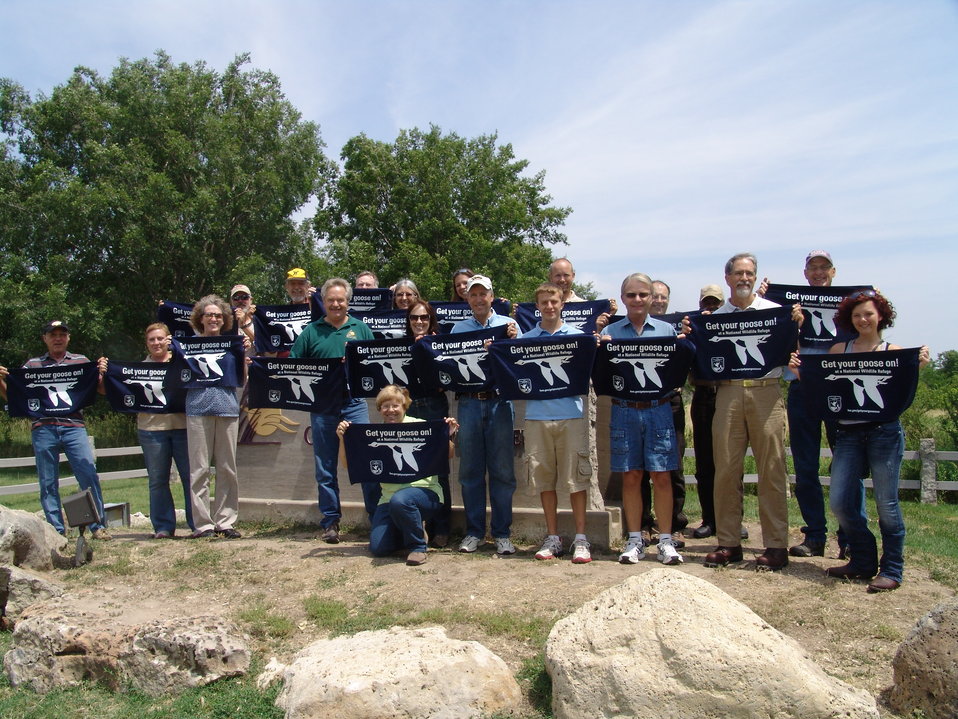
Get Your Goose On!

'Goose Counters' at the Great Plains Nature Center.